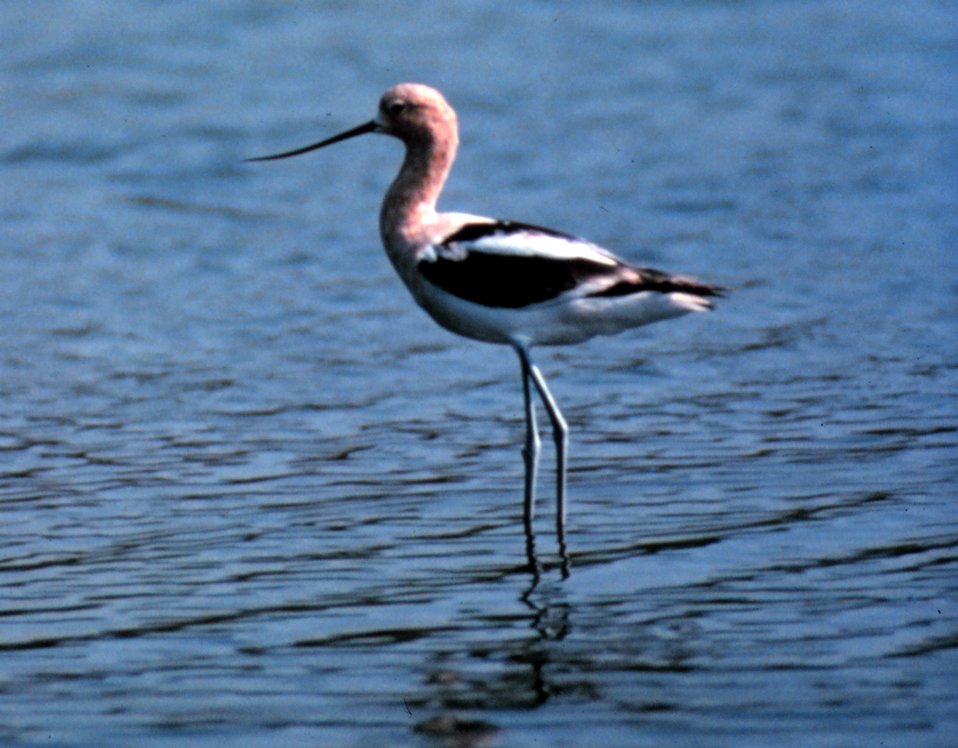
ACE Basin National Estuarine Research Reserve. An Avocet wades in the shallows.